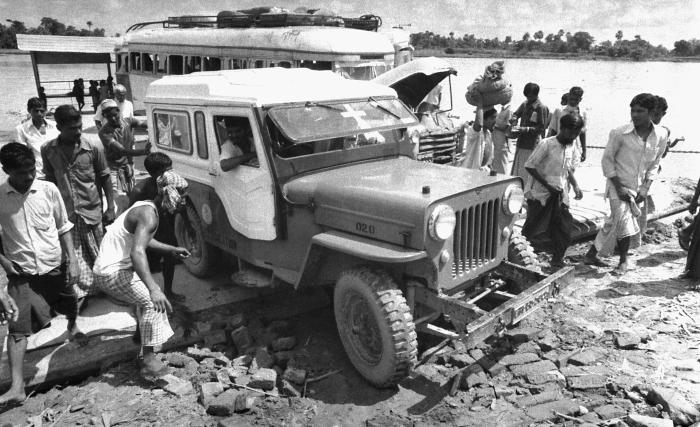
This photograph was captured by Pierre Claquin, M.D., B.A.C., who at the time was a member of the World Health Organization's Smallpox Eradication Program. It was provided by former E.I.S. officer, Stanley O. Foster M.D., M.P.H., was one of a series entitled 'The Story of One Smallpox Jeep', which depicted the travails faced by the jeep, and its occupants of public health practitioners, as they road through the Bangladesh countryside in an attempt to eradicate smallpox from the country. This Mahendra Jeep was being ferried across a river in order to continue its rural countryside journey educating residents about smallpox, its signs and symptoms. At the time of Smallpox Eradication, 72-76 ferries were used to cross the rivers. This was the Daukandi ferry, which traveled from Dhaka to Comilla, a route now traversed by a bridge. Travel which used to take 12-24 hours, now can be done in 2-3 hours by bridge, many which were blown up during the country's 1971 war with India.